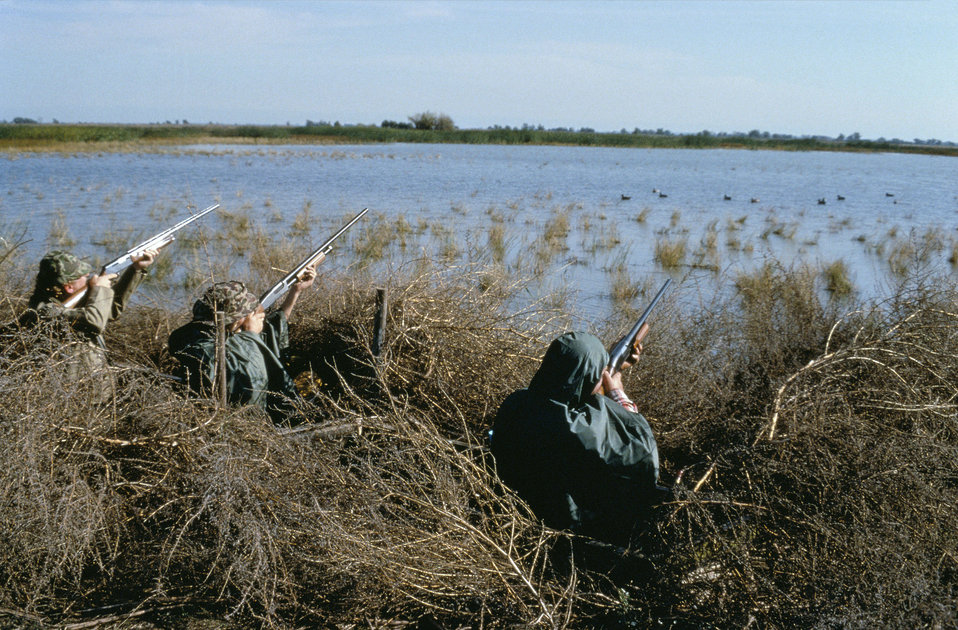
Waterfowl Hunt

Photo credit: USFWS/Megan Durham

Higher temperatures and more severe droughts also dry up streambeds and wetlands, harming species such as waterfowl